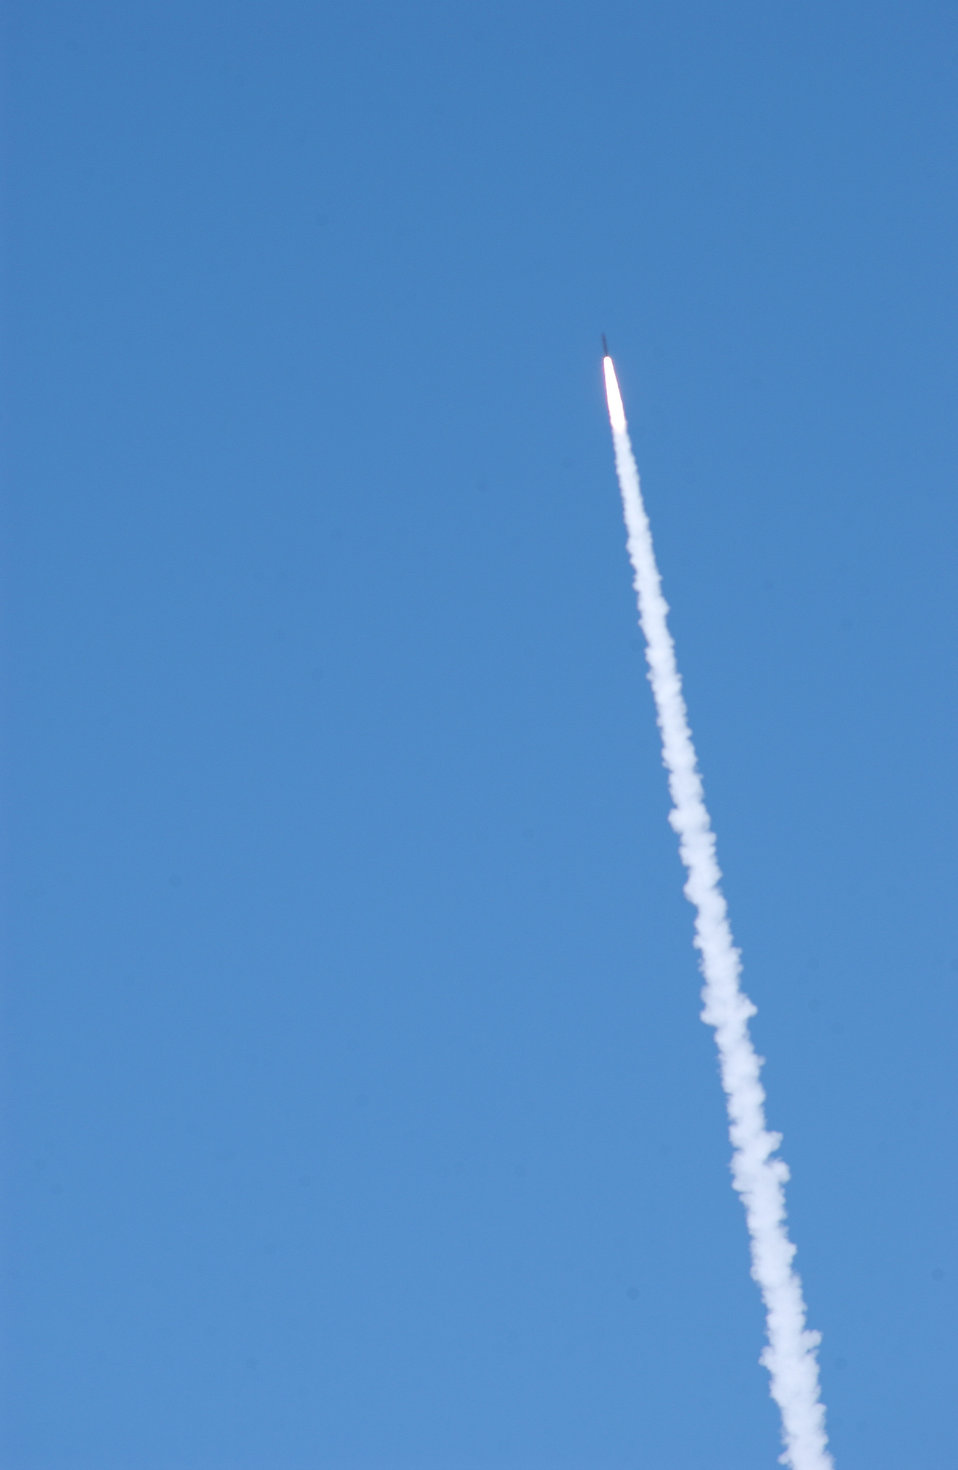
Missile Defense

Airmen at Vandenberg Air Force Base, Calif. alongside officials from the Missile Defense Agency successfully launched an improvised ground-based interceptor missile designed to protect the United States against a limited long-range ballistic missile attack.